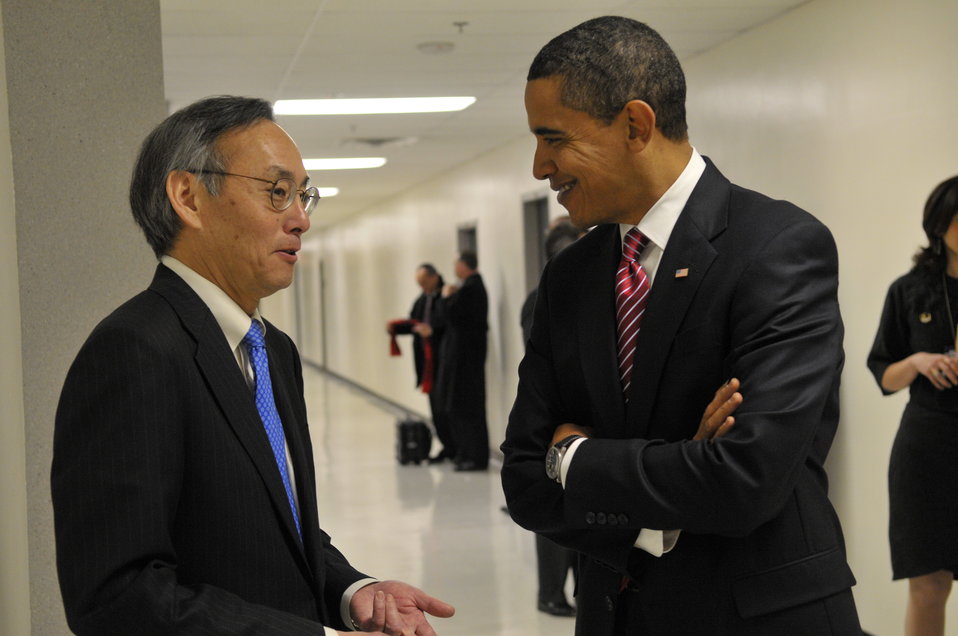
President Obama Visits the Energy Department

President Obama talks with Energy Secretary Steven Chu at Energy Department headquarters. | Feb. 5th, 2009